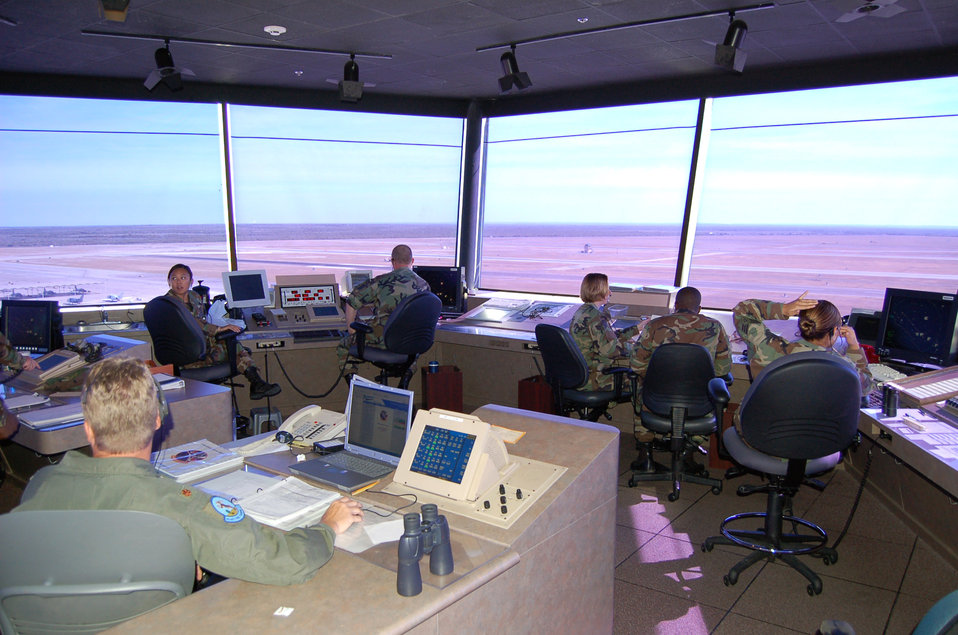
Laughlin students keep air traffic controllers busy

Air traffic controllers monitor traffic on the flightline at Laughlin Air Force Base, Texas, on June 26, 2006. During the morning peak time an aircraft takes off every three minutes from one of the base's three runways.